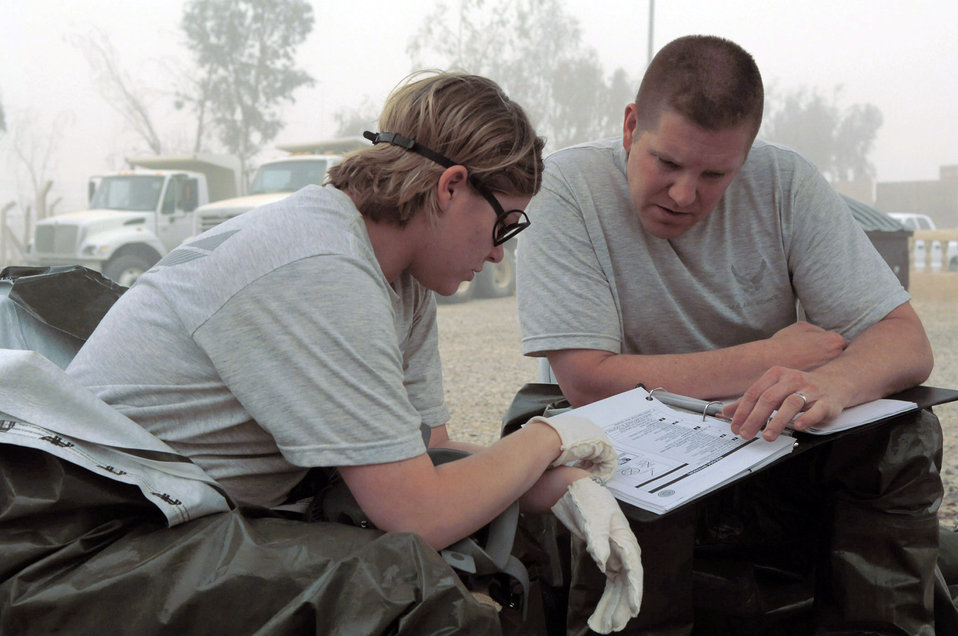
AOR emergency managers gather at Balad to hone skills

Staff Sgt. Amber Albano and Senior Master Sgt. Thomas Stoudt review response actions before investigating an unknown powdery substance in a building during a training event at Balad Air Base, Iraq, April 17. The unknown substance scenario was one of many that Airmen from Balad AB, Kirkuk Regional AB, Ali Base, and Al Asad Airfield participated in during a week-long emergency management training session which concluded April 19. Sergeant Albano is deployed to 506th Expeditionary Civil Engineer Squadron as an emergency manager at Kirkuk Regional AB. Sergeant Stoudt is deployed to Southwest Asia as the functional manager for the emergency management career field.